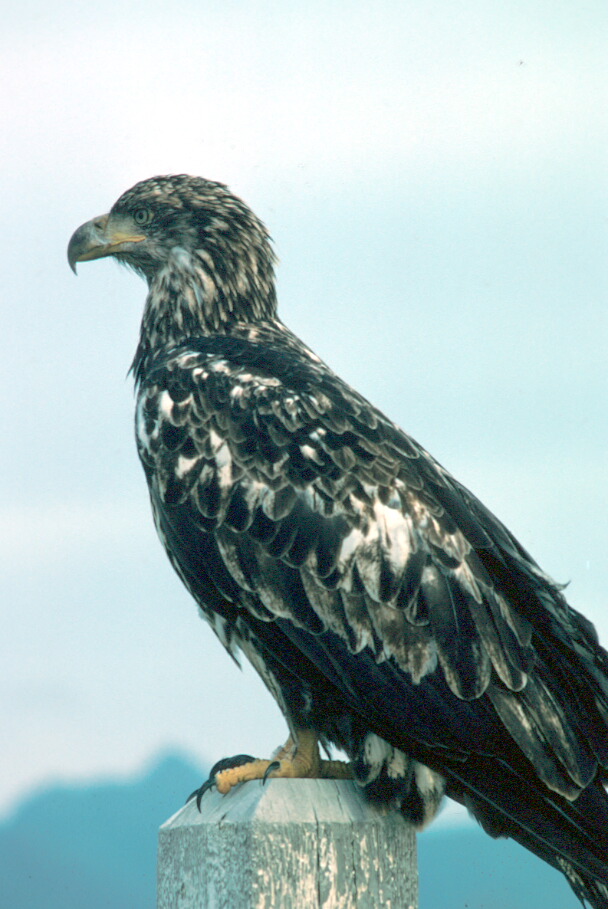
Bald Eagle.